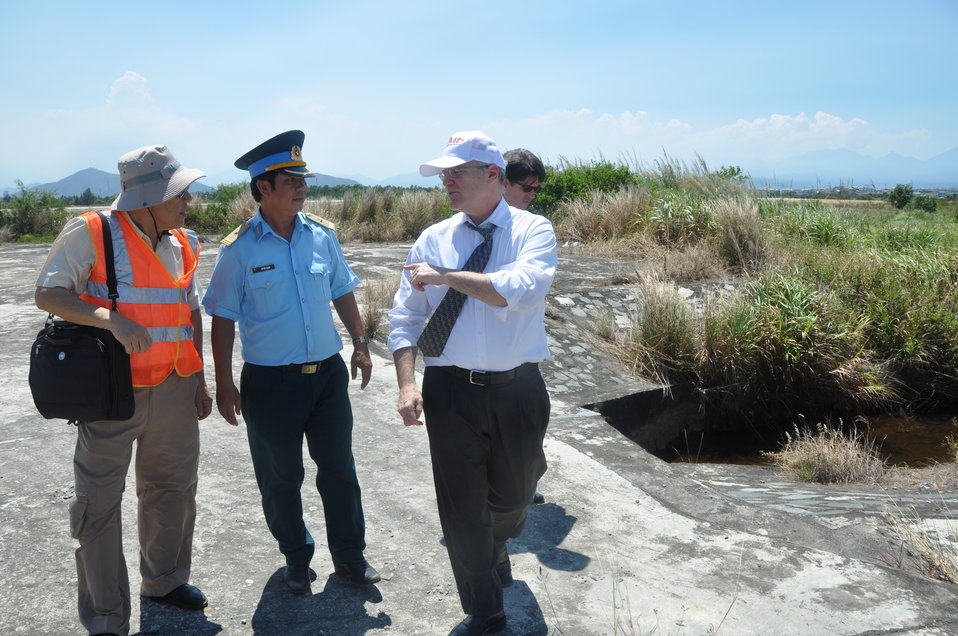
USAID Deputy Administrator Donald Steinberg visits Danang Airport where dioxin remediation project will be conducted

USAID Deputy Administrator Donald Steinberg Visits Vietnam: USAID Photo